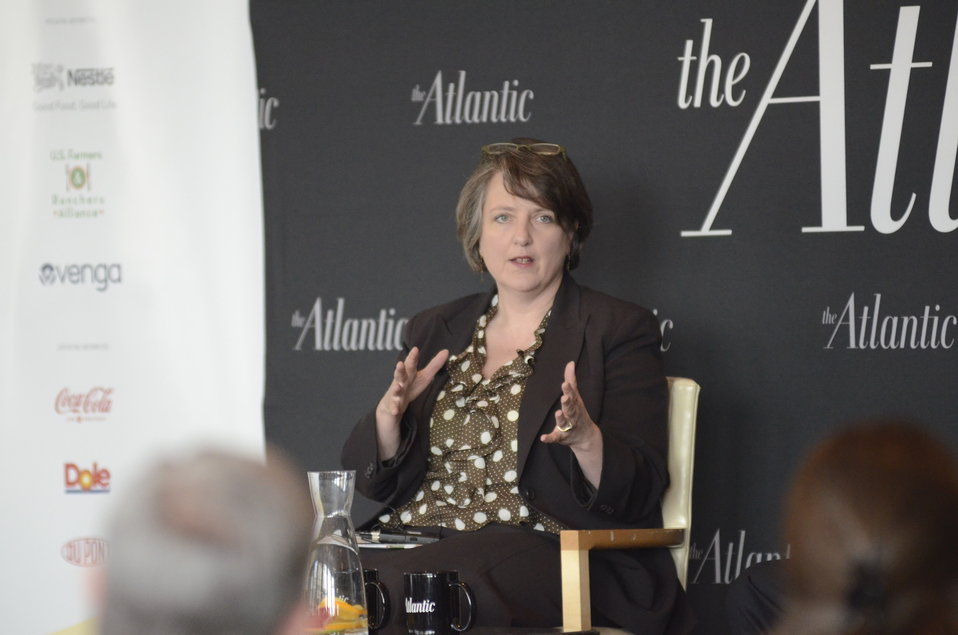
Agriculture Deputy Secretary Kathleen Merrigan answers questions from the audience during the 3rd Aannual Food Summit held at the W Hotel in Washington, D.C. on Thursday, May 24, 2012. The Food Summit event includes interviews, panel discussions and symposia with leading authorities on issues related to food, food security, and nutrition.